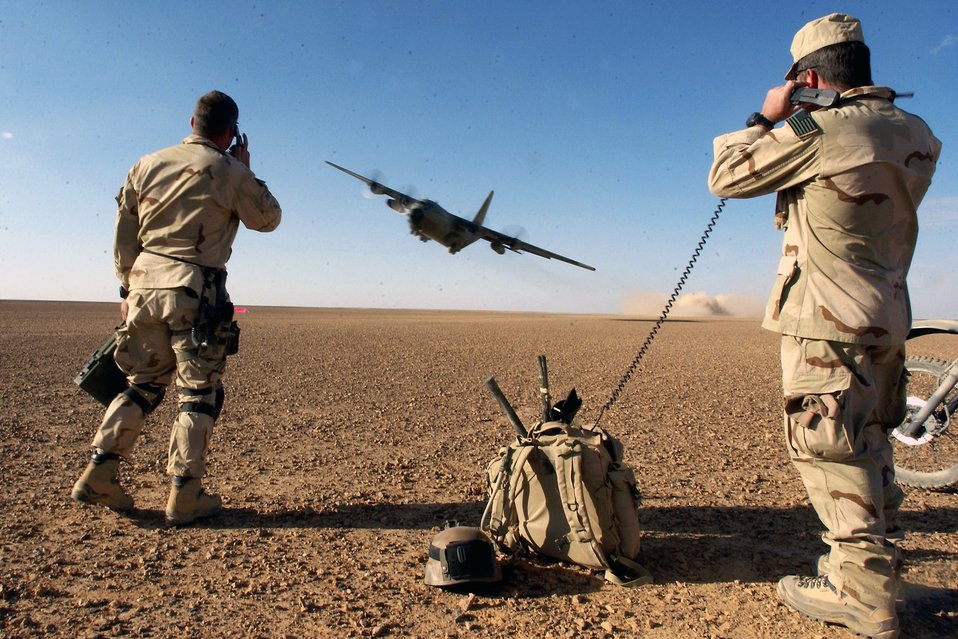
You're cleared for take-off

Air Force Special Operations Command combat controllers give a C-130 Hercules take off clearance and provide air traffic control during a mission to establish and assess an airfield March 15 at a forward deployed location in support of Operation Enduring Freedom.